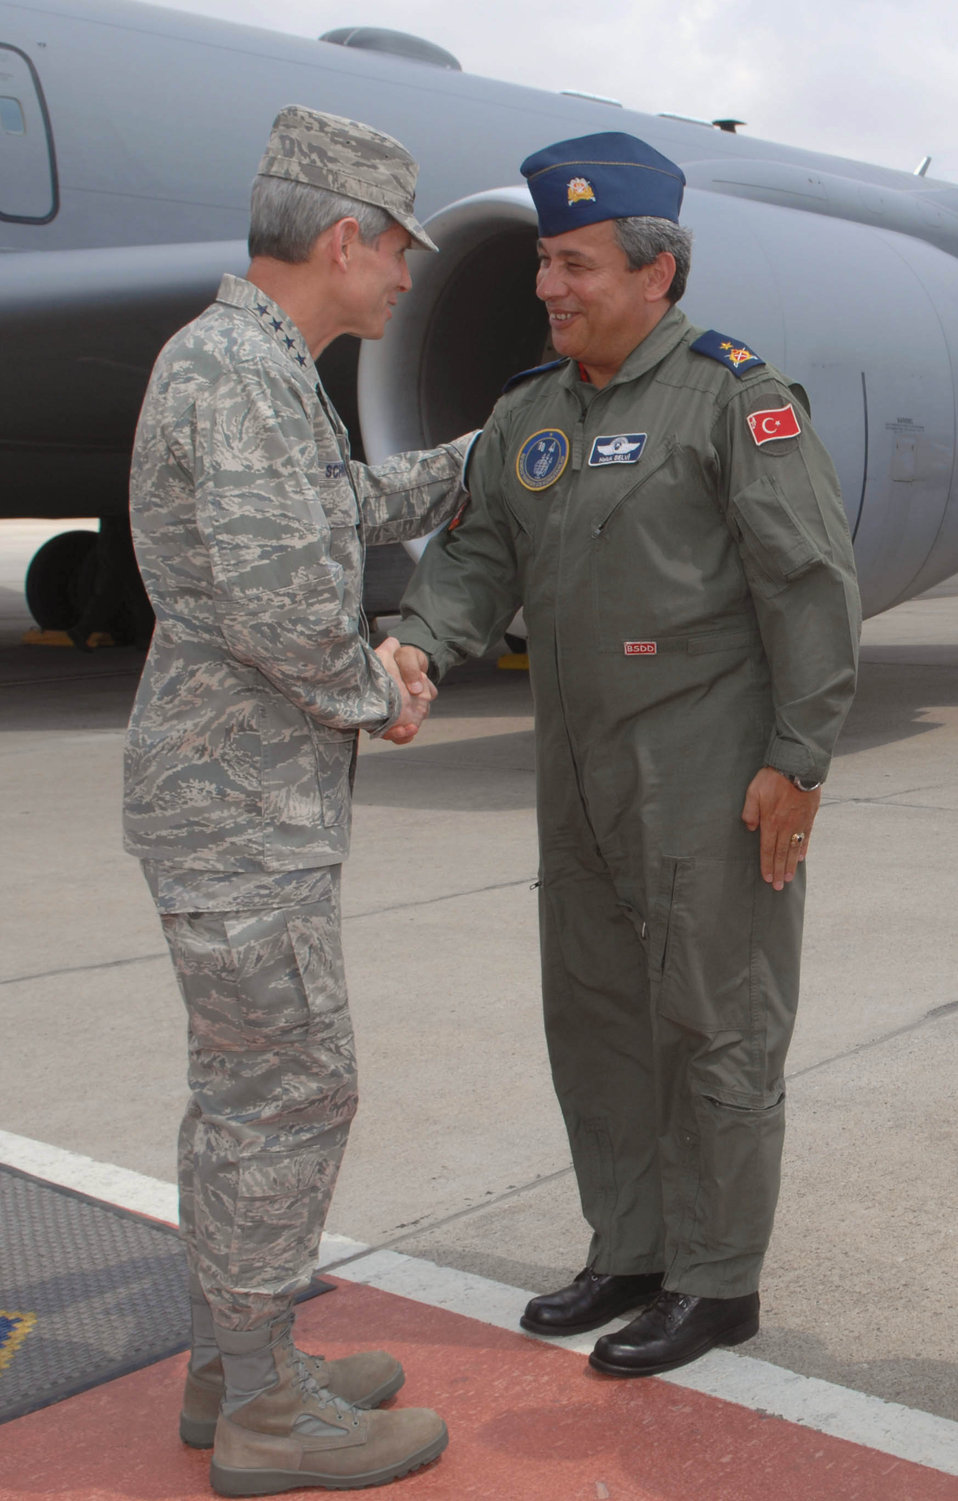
CSAF visits Incirlik

Air Force Chief of Staff Gen. Norton Schwartz is welcomed by Turkish air force Brig. Gen. Haluk Selvi July 21, 2010, at Incirlik Air Base, Turkey. The Air Force's top uniformed officer toured work areas, visited with Airmen around the base and addressed issues affecting the Air Force with more than 500 Airmen during an all call. General Selvi is the 10th Tanker Base commander.